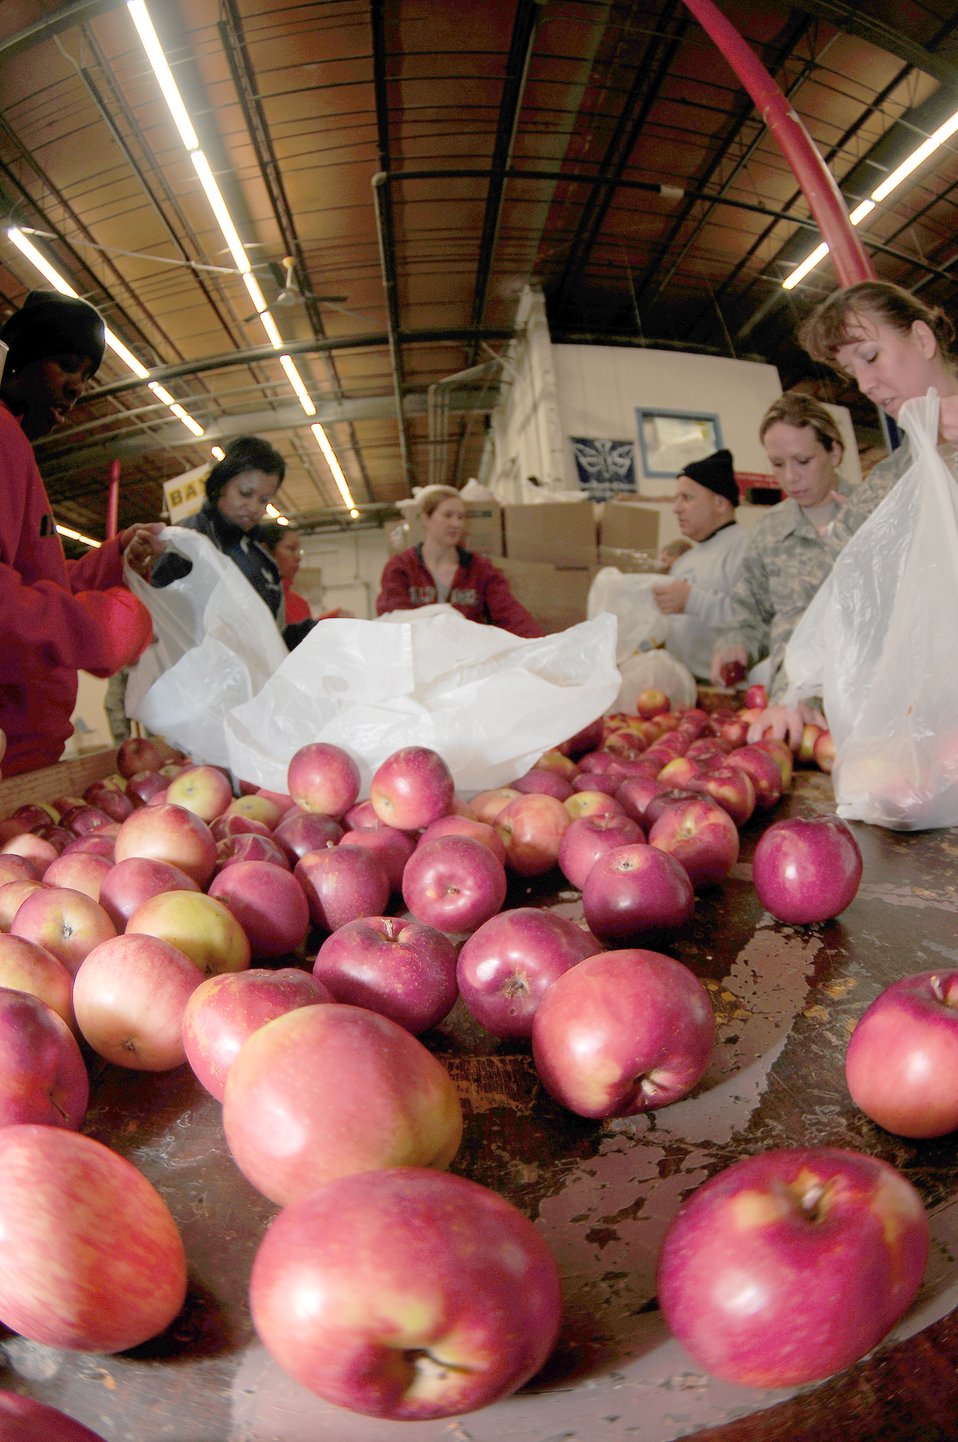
Food

The Food Transformation Initiative is a pilot program that will test a food delivery model aimed at improving quality, variety and availability of food at Elmendorf Air Force Base, Ala., Fairchild AFB, Wash., Little Rock AFB, Ark., MacDill AFB, Fla., Patrick AFB, Fla., and Travis AFB, Calif.